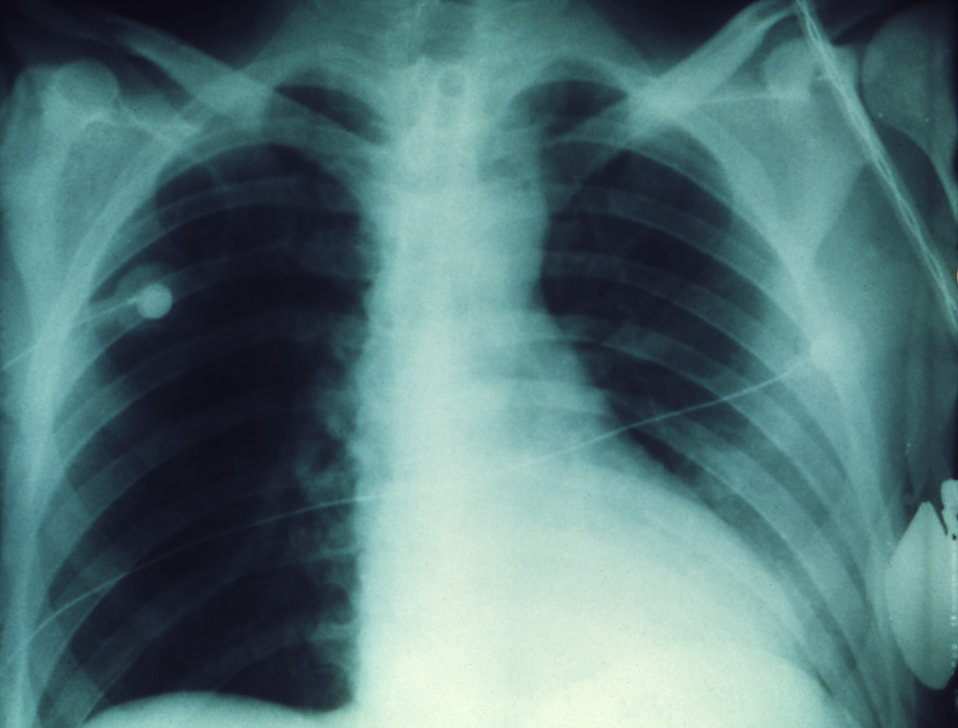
This anteroposterior x-ray reveals the resolution of a plague infection with clearing in bilateral lung fields.